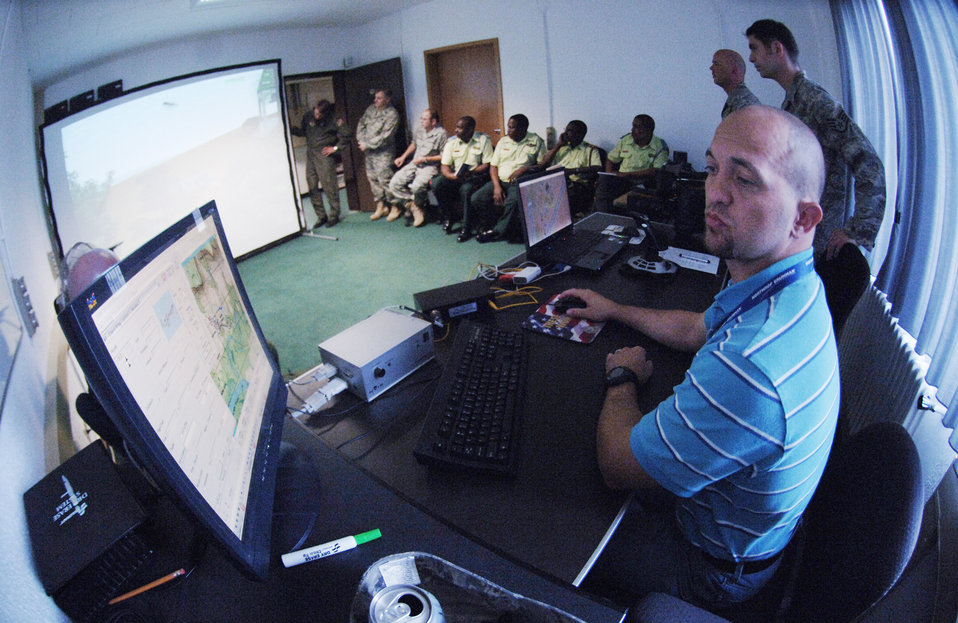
17th Air Force officials discuss air operations organization with Botswana delegation

Mr. Casey Ficus works the close-air-support simulator for Lt. Col. Tony Forkner, the commander of the U.S. Air Forces Europe Air Ground Operations School, and guests from Botswana. They are the first African military delegation to visit the facility here.